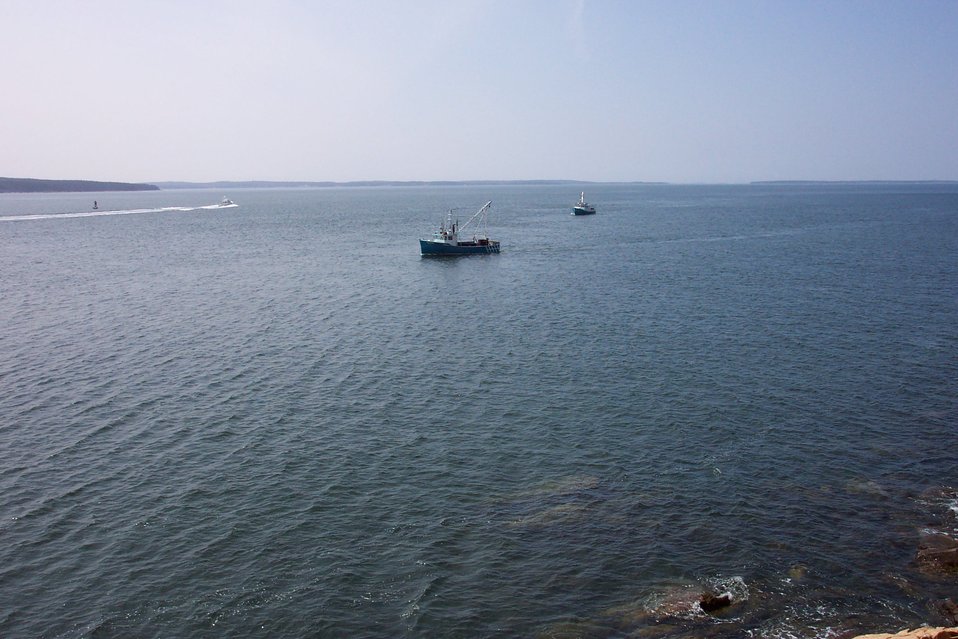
Lobster boats working off of Bass Harbor Head.